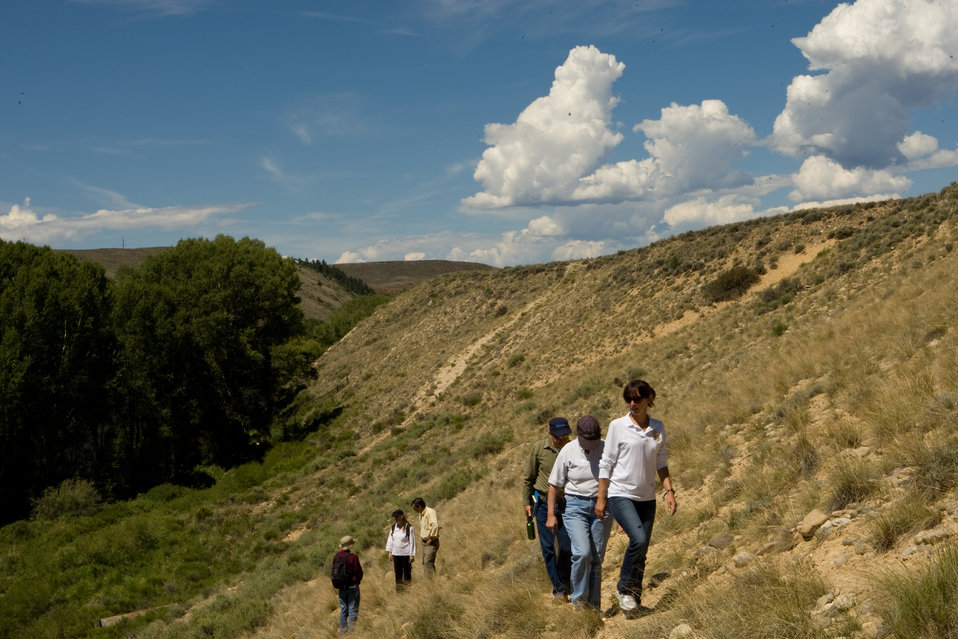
Colorado Rare Plant Conservation Initiative

The Colorado Rare Plant Conservation Initiative (RPCI) is a partnership of 23 statewide and regional agencies, private organizations, and academic institutions working to conserve 121 rare plants in Colorado. As part of these efforts the group developed the Colorado Rare Plant Conservation Strategy, developed Best Management Practices to reduce energy development impacts, addressed climate change, and developed focused strategies for the conservation of individual species at eight priority landscapes. The group has also worked to coordinate volunteer efforts for plant conservation across the state.